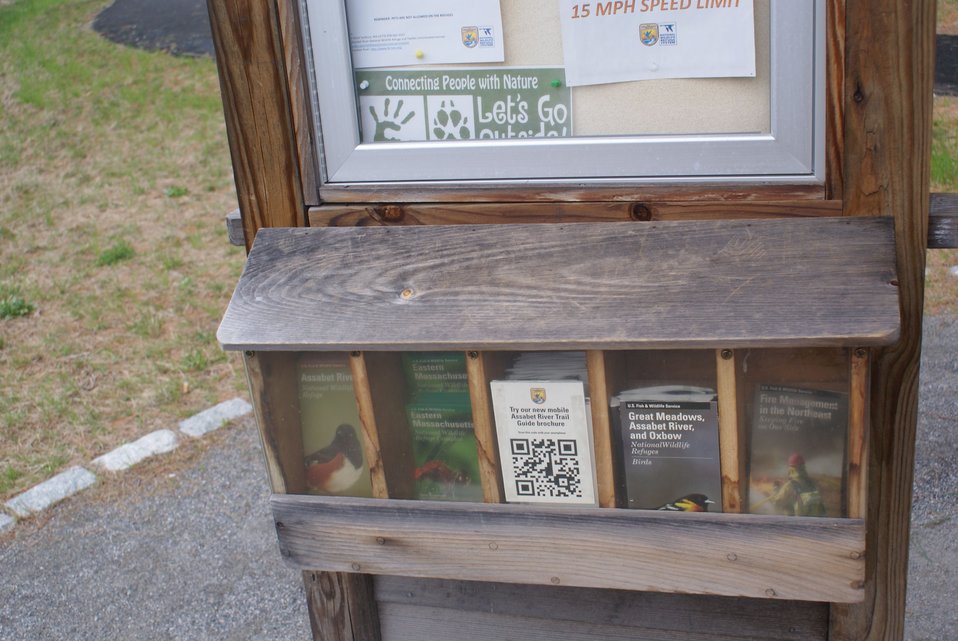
QR codes at Assabet River Refuge

QR codes in refuge kiosk at Assabet River Refuge in Massachusetts